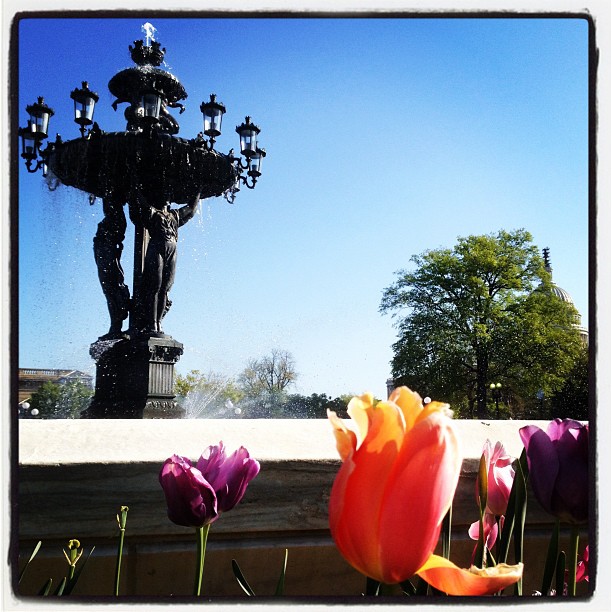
Need serenity now? Stop by and enjoy the restored Bartholdi Fountain now open for season. #dc